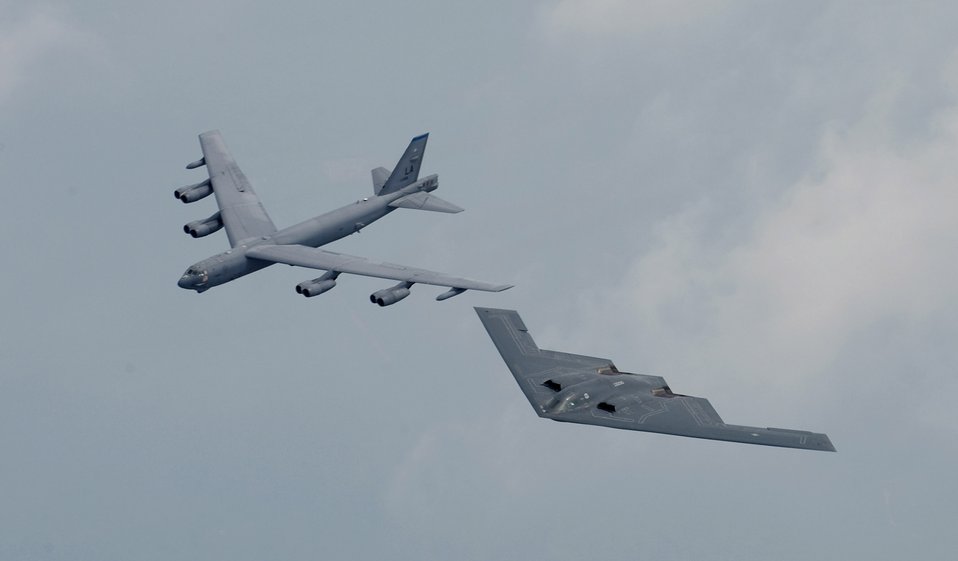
Bombers on parade

A B-2 Spirit and B-52 Stratofortress fly in formation over Shreveport, La., May 10 during the open house and air show at Barksdale Air Force Base, La. The air show featured modern day bombers, and commemorated the 75th anniversary of the base.